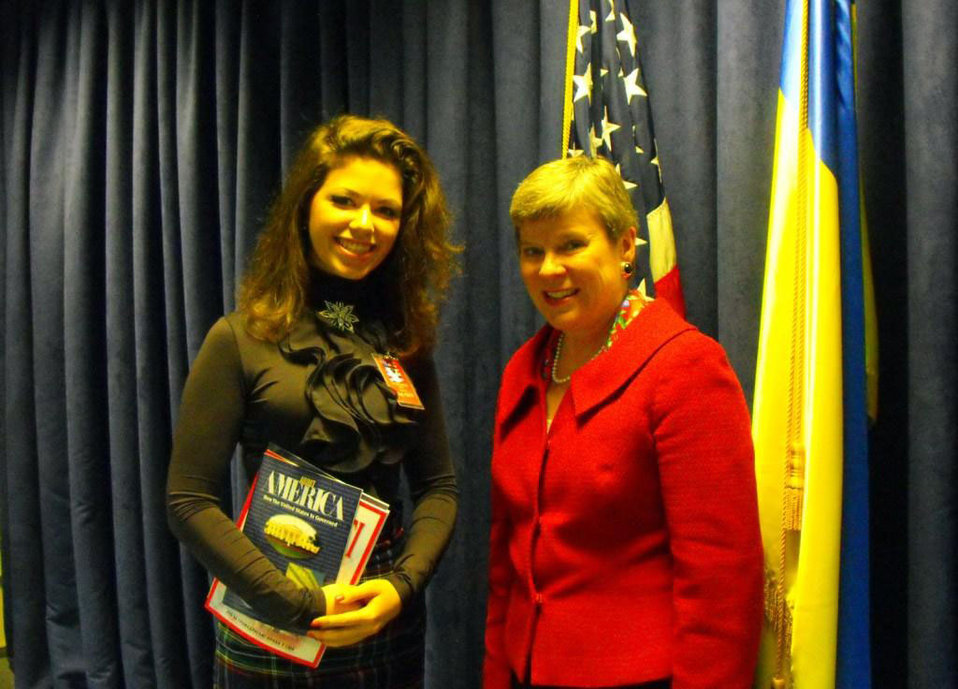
Assistant Secretary Gottemoeller Poses for a Photo With a Student

U.S. Assistant Secretary of State for the Bureau of Arms Control, Verification and Compliance Rose Gottemoeller poses for a photo with a student in Kyiv, Ukraine, on February 7, 2011.